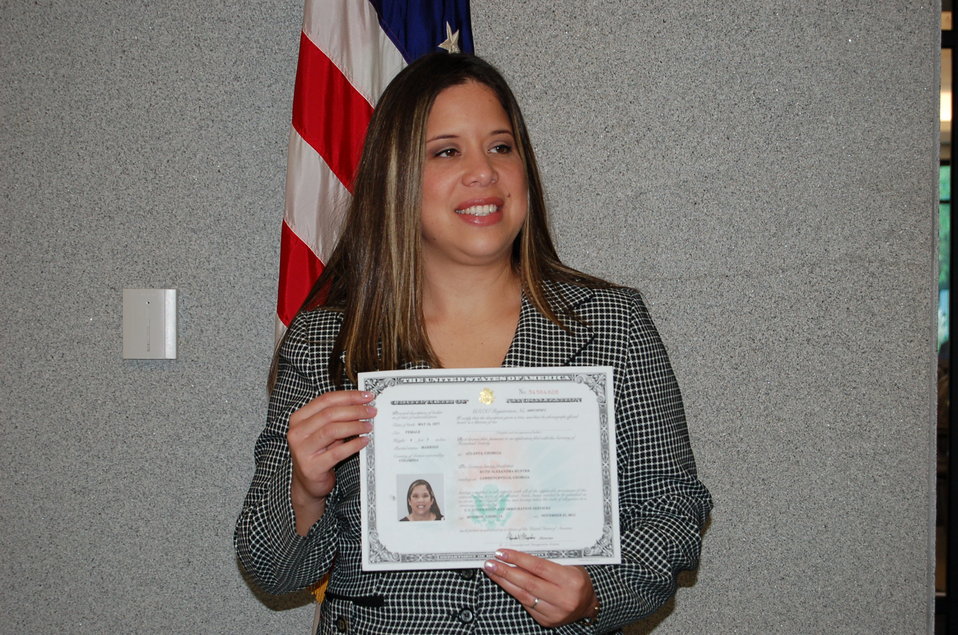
New Citizens